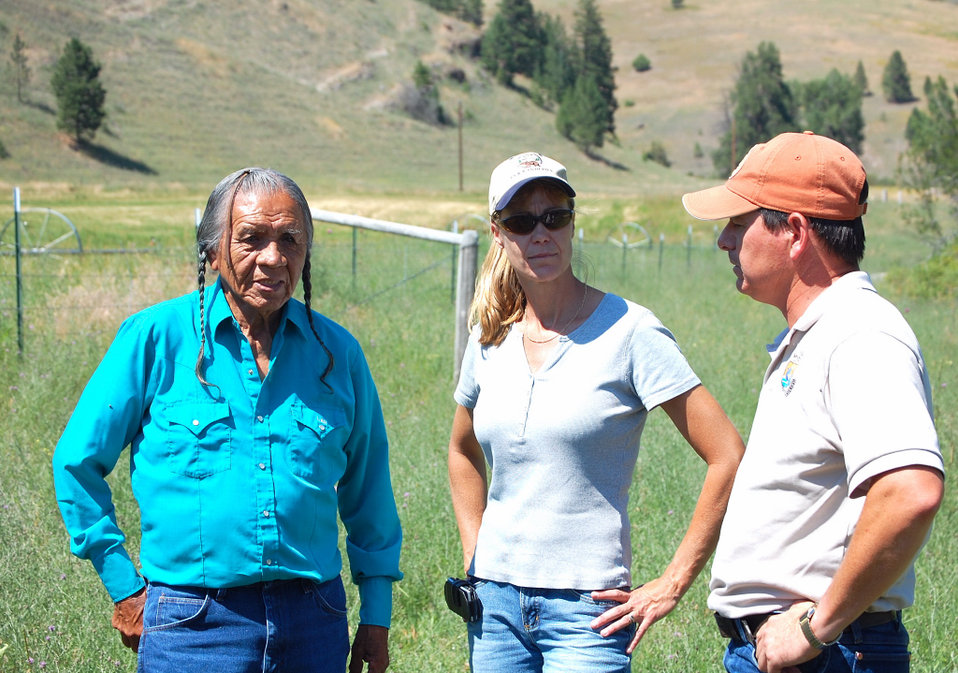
Partners for Fish and Wildlife with a Landowner

Region 6 Partners for Fish and Wildlife (PFW) program has worked extensively with private landowners throughout Montana. The cooperator (far left) voluntarily entered into an agreement with the PFW program to restore a portion of the Jocko River.